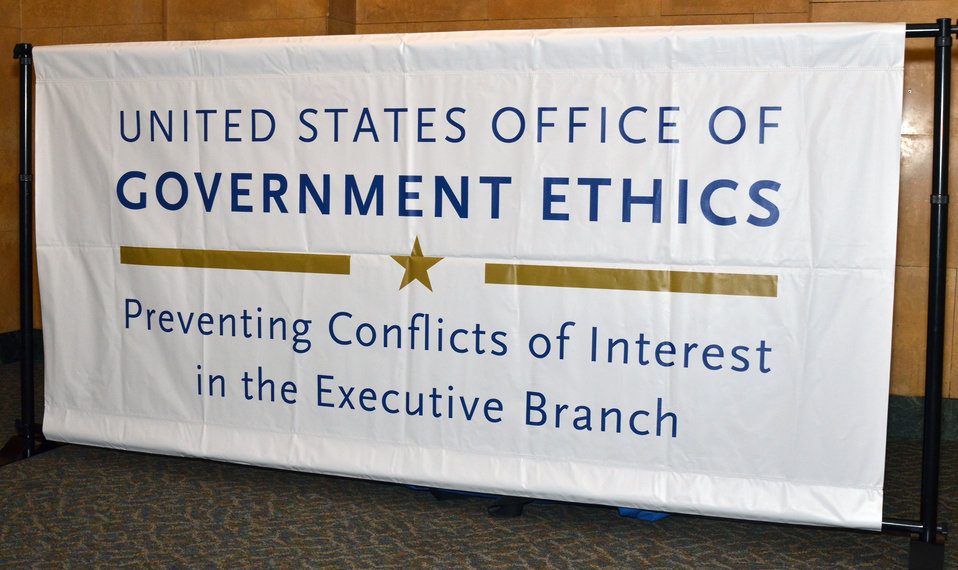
The U.S. Office of Government Ethics presented training on Preventing Conflict of Interest in the Executive Branch at the Jefferson Auditorium at the U.S. Department of Agriculture (USDA) in Washington, D.C. on Wednesday, Aug. 21, 2013.